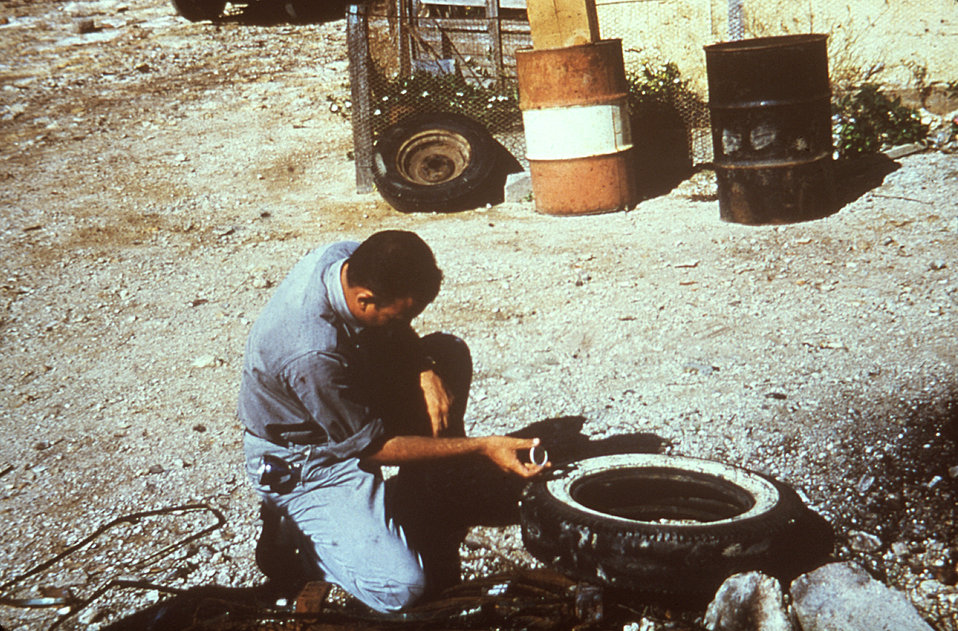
This photograph depicts an entomologic field technician inspecting some discarded automobile tires for the presence of mosquitoes, primarily Aedes aegypti, which is a vector responsible for the transmission of Dengue fever to humans.